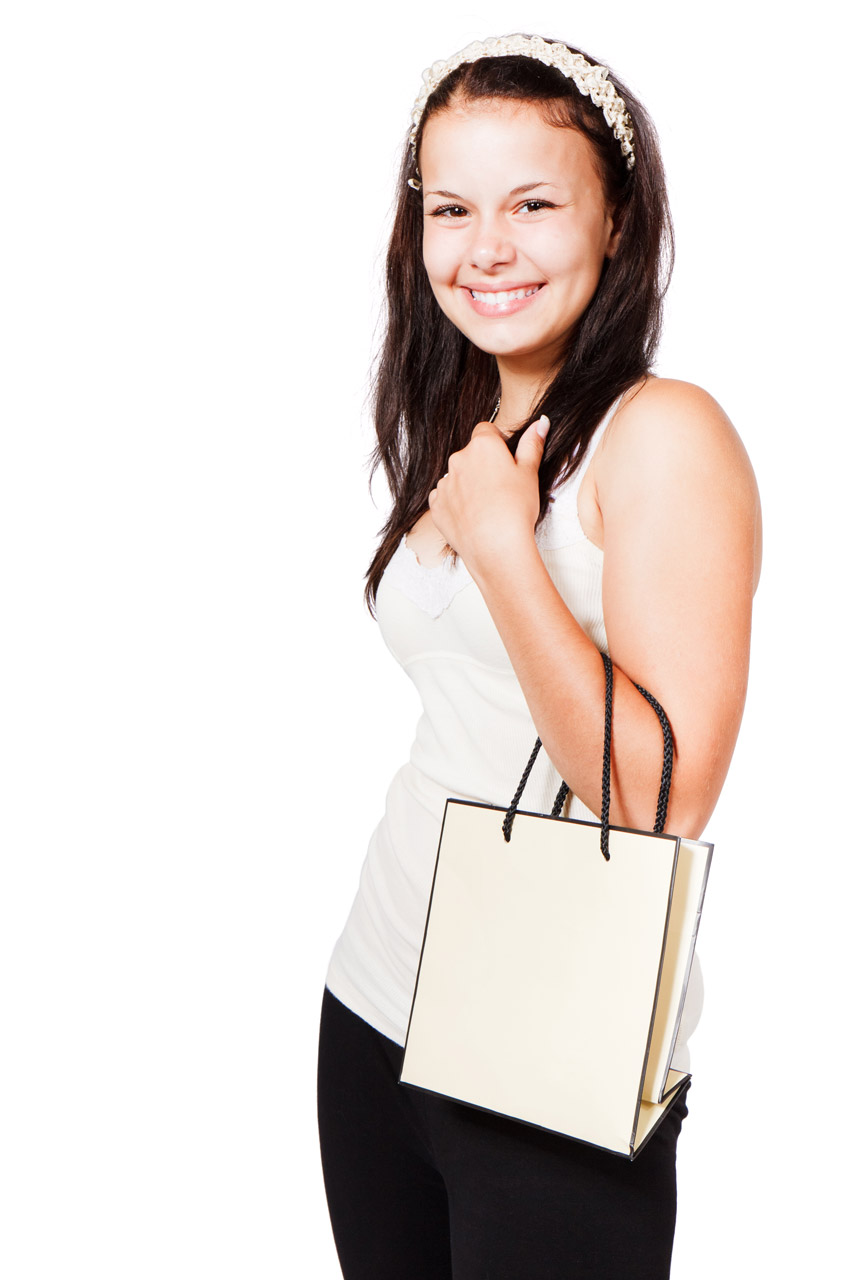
Girl with a bag isolated

Young girl with a shopping bag isolated on white background.